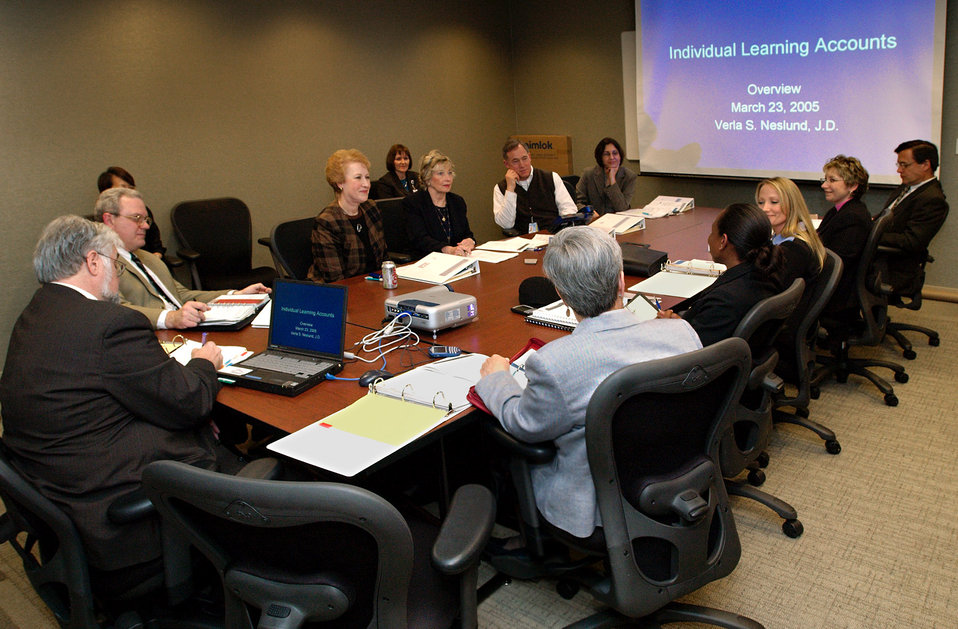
This photograph depicted a meeting of CDC's Excellence in Learning Council (ELC). Shown here seated clockwise around the table beginning at the head was Frank Ceo; Dir. of the Div. of Strategic Programs, Jeff Adair; VP for Programs, CDC Foundation, Verla Neslund; Sr. Service Fellow, Joan Cioffi; Dir. of the Office of Workforce and Career Development (OWCD), Stephen B. Thacker; Sr. Advisor, Assoc. Dir. of Prog. Mgmt., Candice Nowicki-Lehnherrr; Assoc. Dir. for Science, Michael St. Louis; Acting Workforce and Career Development Off., Gina Martin; Allison Davis; Sr. Prog. Mgmt. Office, Marcella Law; Workforce Development Liaison, Elizabeth Howze; in the background, Medical Epidemiologist, Robin Ikeda, and Health Education Specialist, Deborah Gould.